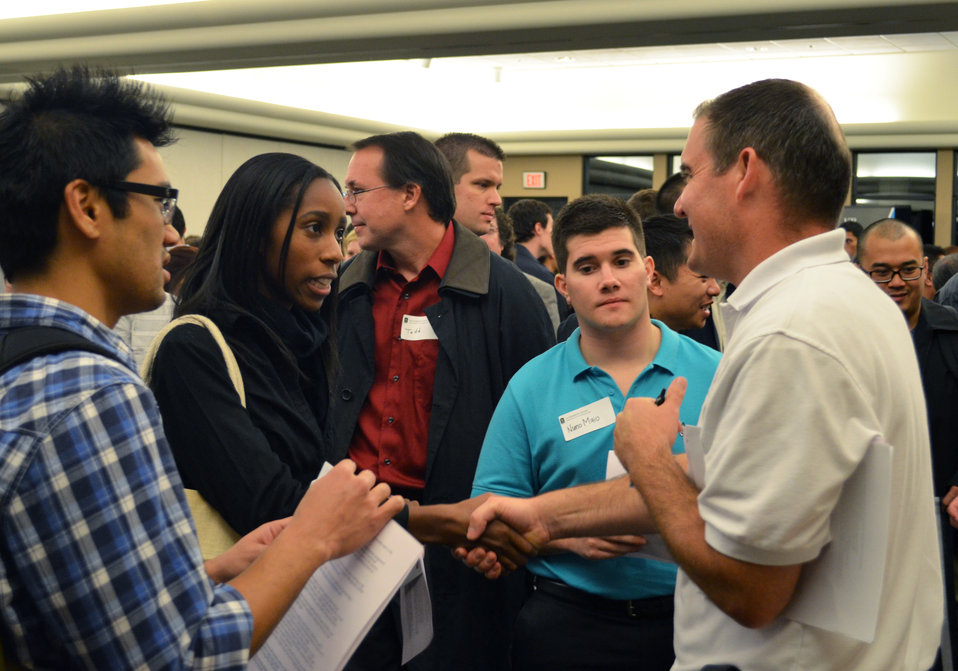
Corps engineers showcase federal jobs to students at Career Fair

Will Hall, senior technical lead for the design branch of the U.S. Army Corps of Engineers Sacramento District, greets students at the Corps’ display at the California State University-Sacramento’s career fair in Sacramento, Calif., Nov. 3, 2011. Hall and other Corps engineers spoke to more than 40 students about intern and job opportunities with the Corps, aimed at students in engineering fields.